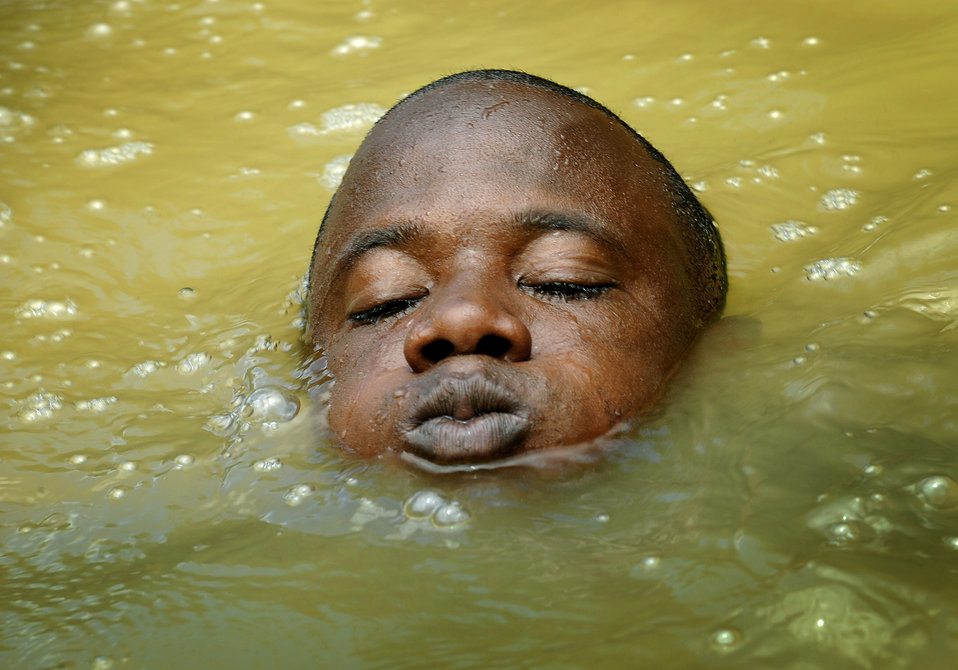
Operation Southern Partner

Constable allen Abbott of the Royal St. Lucia Police Force's Special Service Unit tries to stay afloat while practicing swiftwater rescue procedures during Operation Southern Partner, La Toc, St. Lucia, June 5. Operation Southern Partner is a long term commitment between U.S. and partner nations to share experiences, information, vital skills, tactics and techniques in preparation for future regional challenges that require cooperative solutions.